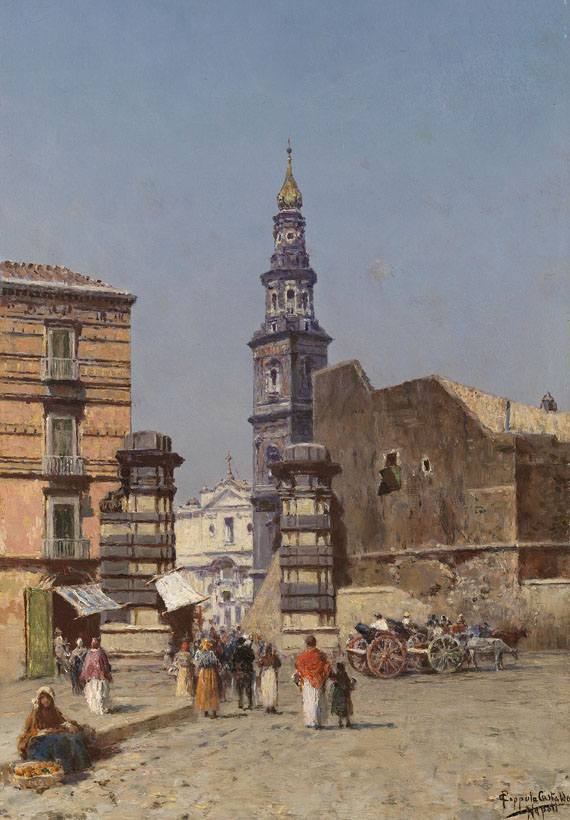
Napoli. 40,5 x 28 cm